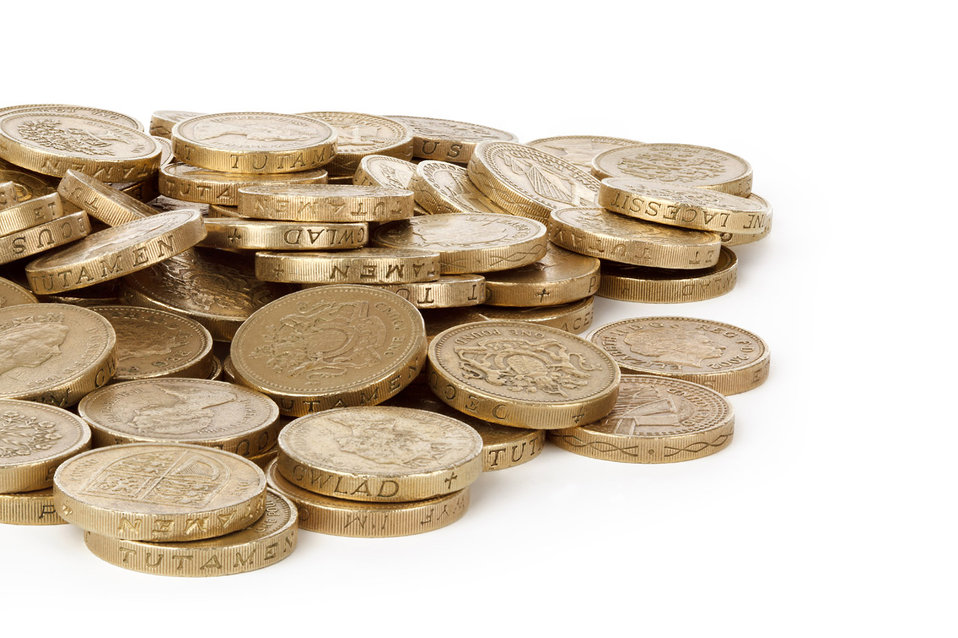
Golden coins

Pile of british pounds isolated on white background.